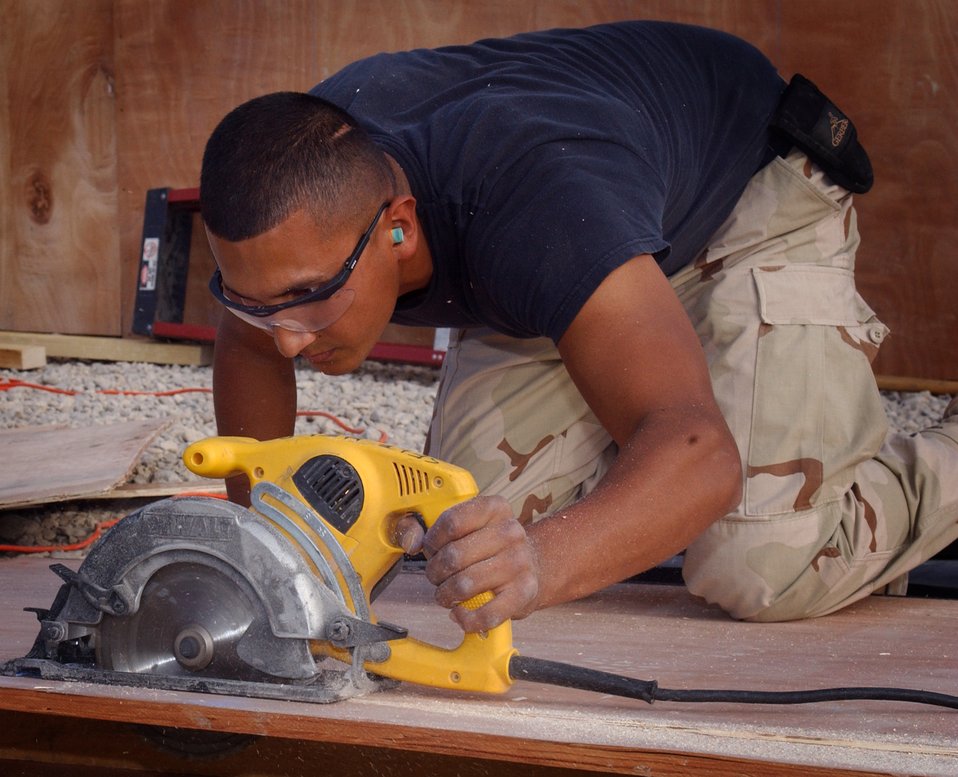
Flooring it

ALI BASE, Iraq (AFPN) -- The base fitness center is expanding with the addition of a separate aerobics room. Senior Airman Omar Hernandez guides a circular saw along a chalk line marked on a piece of floor sheathing. Airman Hernandez is with the 407th Expeditionary Civil Engineer Squadron